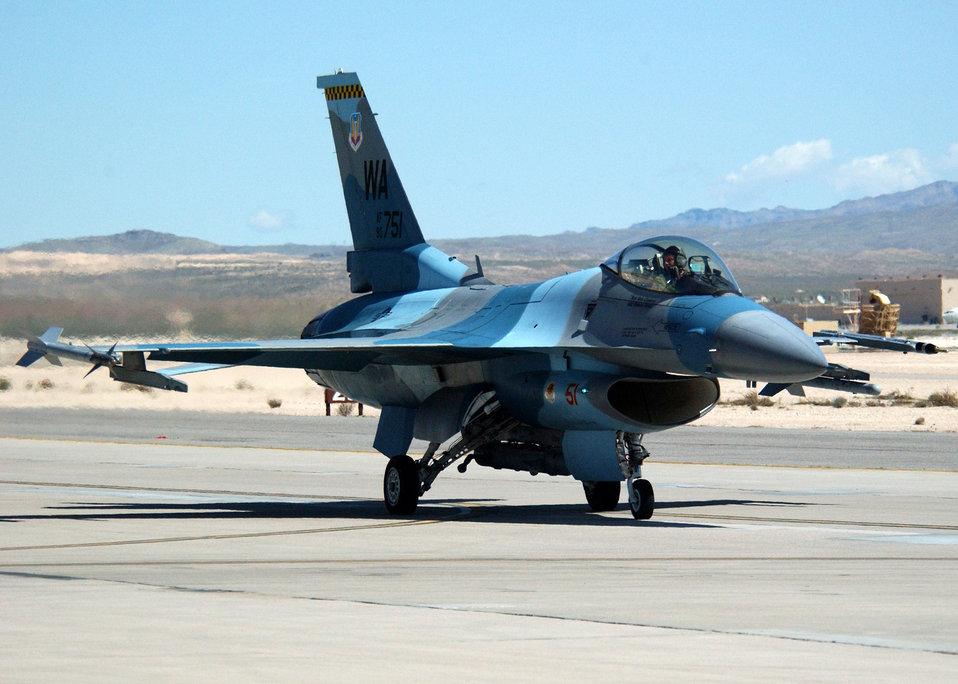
Say 'hello' to the bad guy

NELLIS AIR FORCE BASE, Nev. -- An aggressor pilot makes his way to the runway for a Joint Red Flag mission. The F-16 Fighting Falcons flown by 64th Aggressor Squadron pilots are used to replicate the air-combat tactics of potential threats and are painted to resemble enemy aircraft.